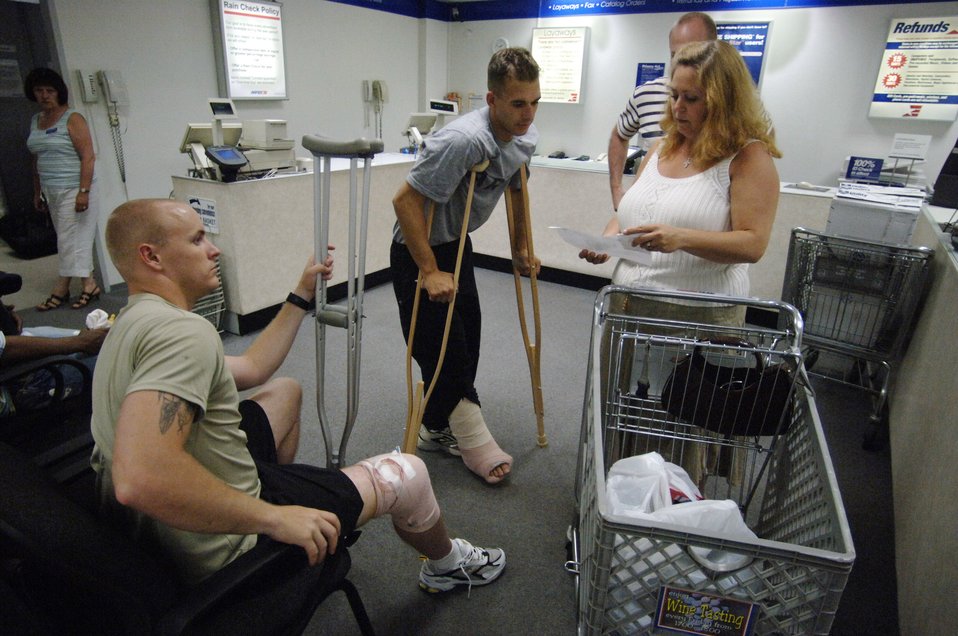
Volunteer organization lifts spirits of wounded veterans

Judy Arnts and husband Senior Master Sgt. Phillip Arnts assist Staff Sgt. Sean Knight and Cpl. Jared Morris, 82nd Airborne Division soldiers, with using $250 gift vouchers donated by the Army Air Force Exchange Service to purchase much-needed replacements for clothing items lost while being medically evacuated from Afghanistan. The Arnts are actively involved in a chartered non-profit organization called